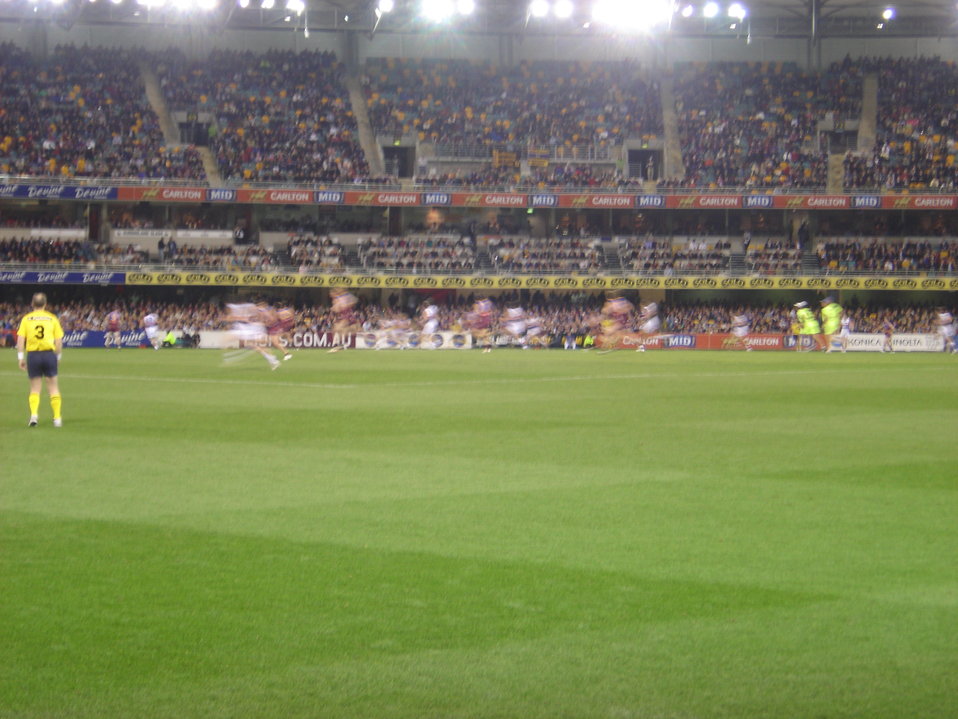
View of the Stanley Street End at the Gabba during an AFL match.